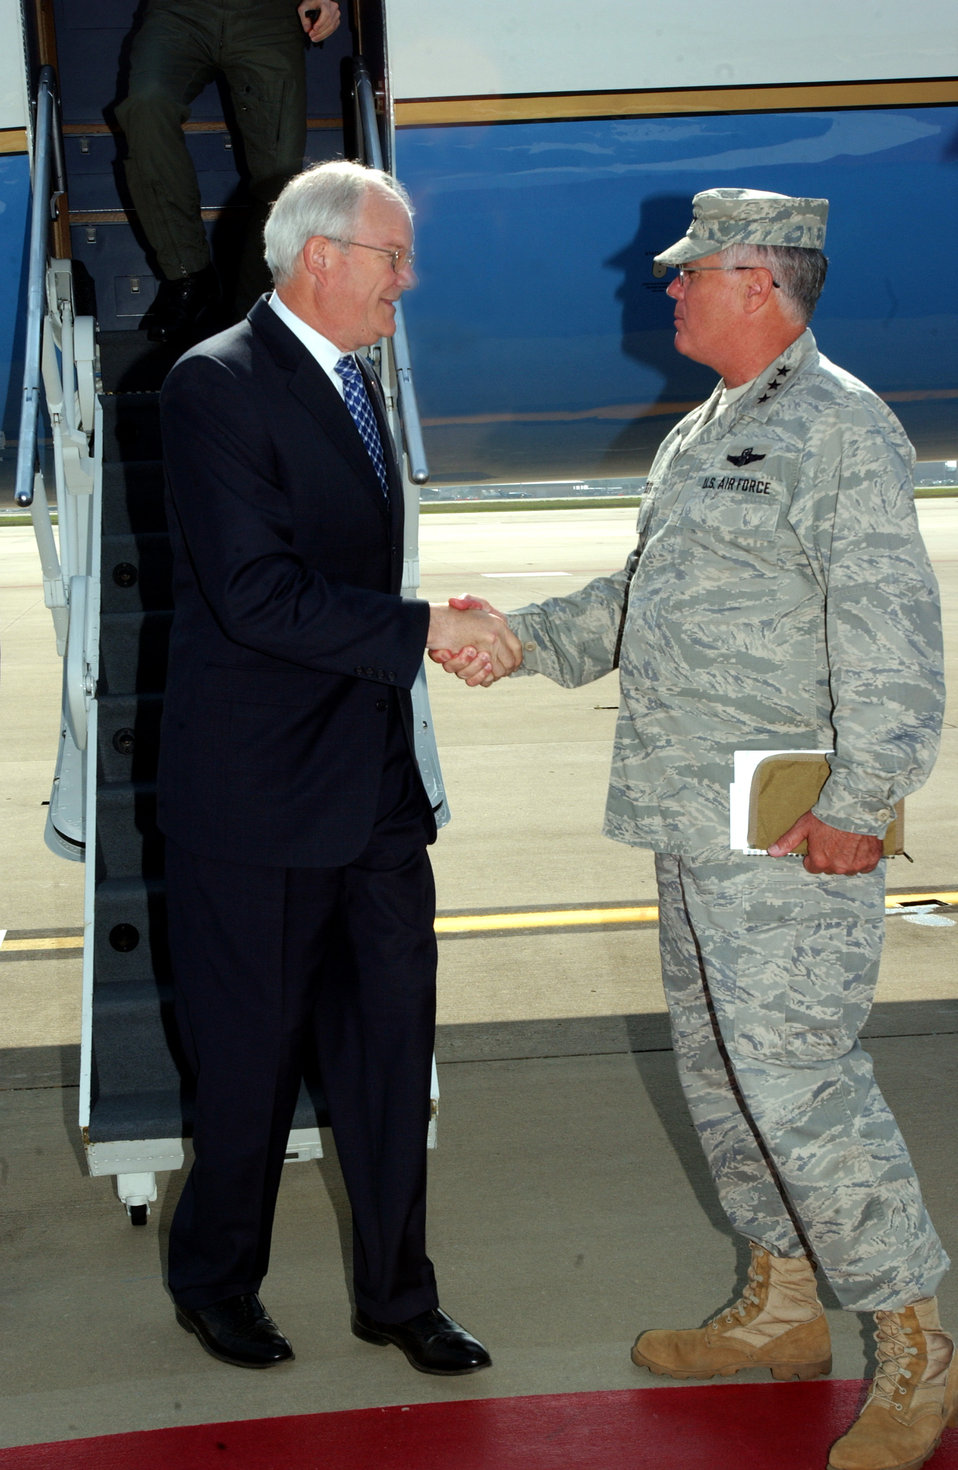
Secretary Wynne tours special ops command

Secretary of the Air Force Michael W. Wynne greets Lt. Gen. Michael W. Wooley after arriving at Hurlburt Field, Fla., on Tuesday, May 9, 2006. General Wooley is commander of Air Force Special Operations Command there.